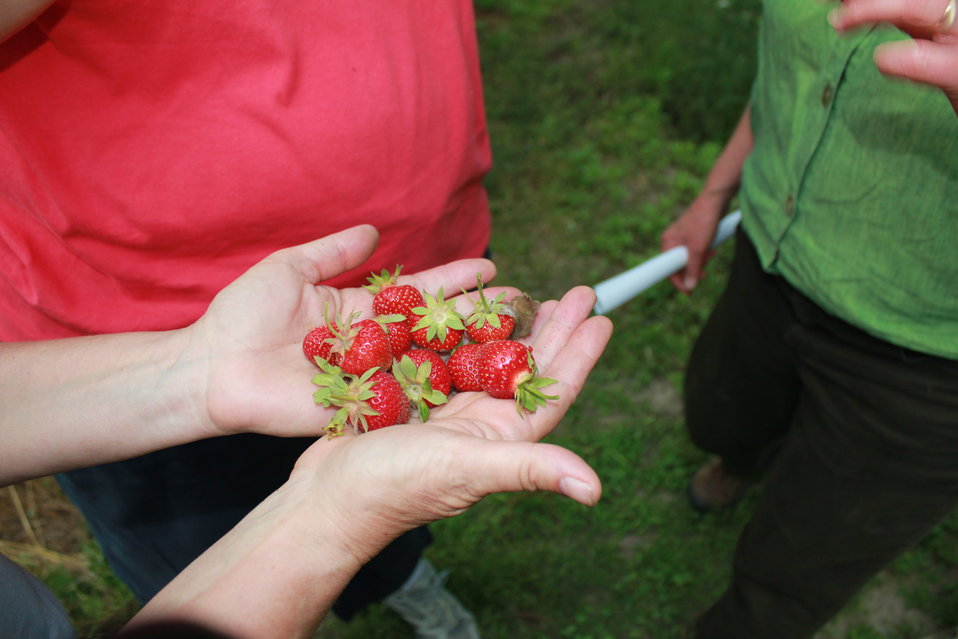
Pollinators in Hadley, MA.